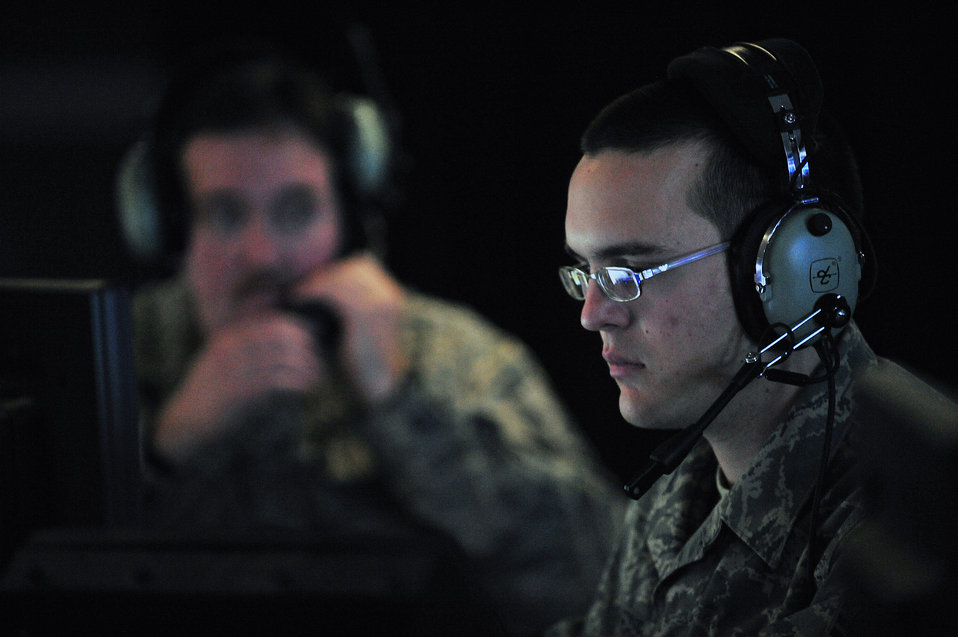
Airmen support Iraqi elections, see history in making

Senior Airman Daniel Shaub concentrates on a screen depicting Iraqi air space in the Control Response Center Jan. 29 at Joint Base Balad, Iraq. Members of the 727th Expeditionary Air Control Squadron are observing the sky and polling stations to give confidence to the Iraqi people and support them while they vote in the 2009 Iraqi provincial elections. Airman Shaub is a 727th EACS air surveillance technician deployed from the Kansas Air National Guard.